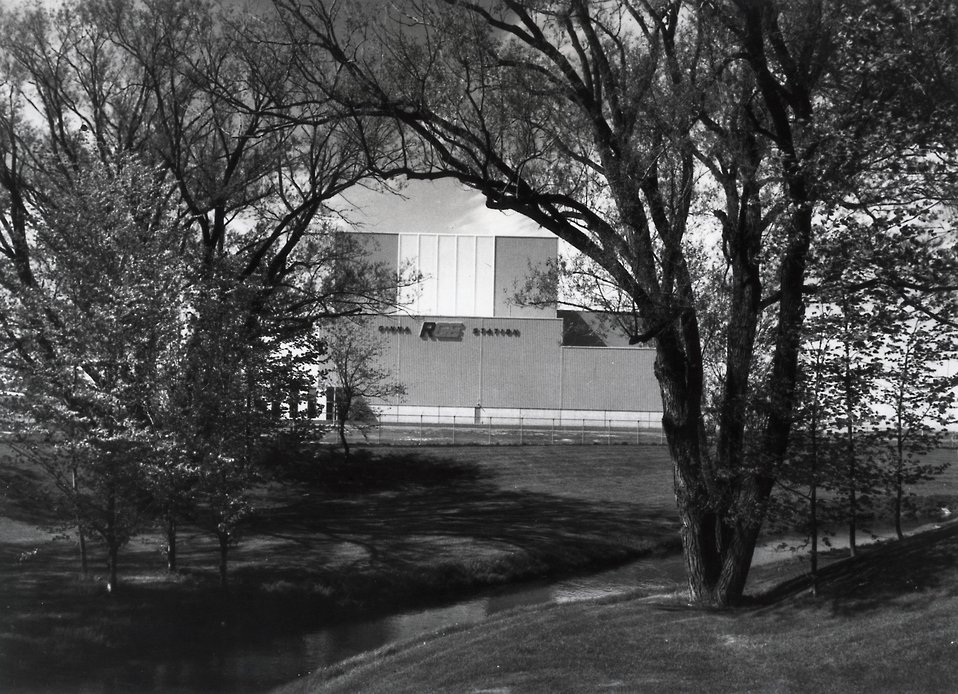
View of the Robert Emmett Ginna Nuclear Power Plant on the south shore of Lake Ontario at Ontario, New York. Circa 1974.